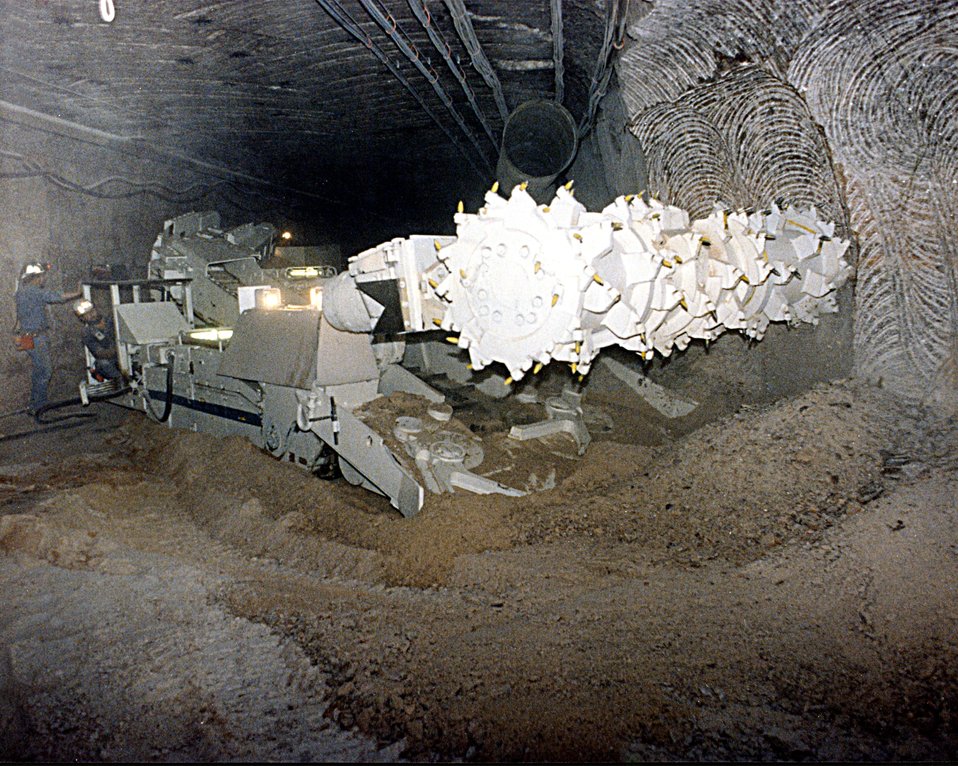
MARIETTA 3612 DRUM MINING MACHINE.

THE WASTE ISOLATION PILOT PLANT IS A DOE RESEARCH AND DEVELOPMENT FACILITY FOR DEMONSTRATING THE SAFE DISPOSAL OF TRANSURANIC RADIOACTIVE WASTES. TEST SHAFTS HAVE BEEN DRILLED TO A DEPTH OF 2,100 FEET. THE SHAFTS, ONE 6 FEET IN DIAMETER AND THE OTHER 12 FEET IN DIAMETER, PROVIDE AN ENTRY PASSAGE AND VENTILATION TO THE UNDERGROUND SALT ROCK FORMATION THAT IS BEING TESTED TO DETERMINE ITS SUITABILITY FOR RADIOACTIVE WASTE STORAGE.